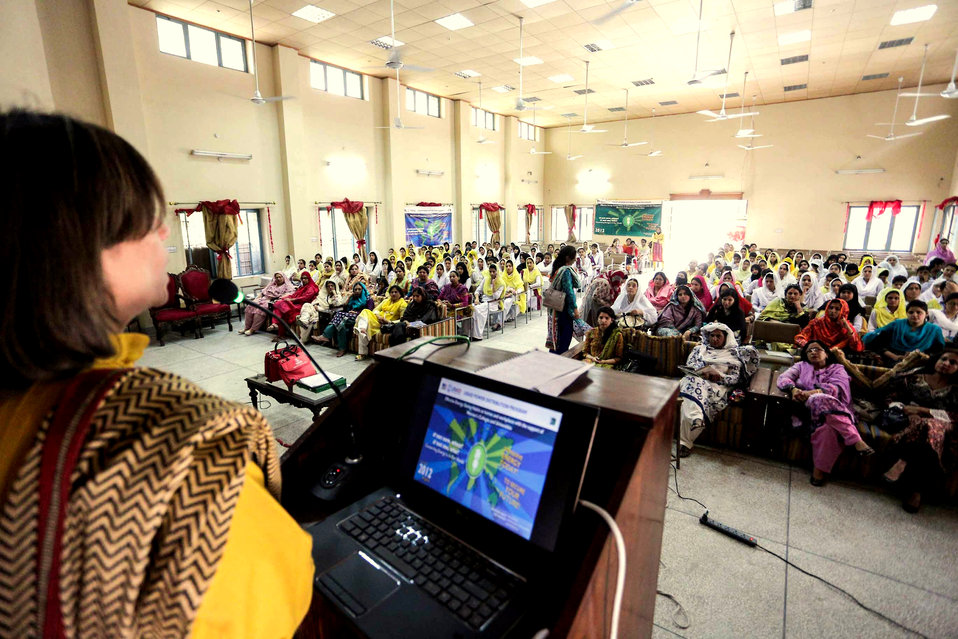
USAID enlightens women about energy conservation and opportunities in distribution companies

“These campaigns are an excellent opportunity for educating young women about to enter the workforce, about employment possibilities, while also educating them about their rights in the workplace, notably through the Protection against Harassment of Women at the Workplace Act of 2010.”
School Principal
Rohila Akbar

Four energy conservation campaigns were held at four women’s colleges of the LESCO region, where 1,200 students and 50 teachers were informed about Pakistan’s power sector. These activities aim to develop consumer awareness by involving female employees of DISCOs to inform and educate Pakistan’s female population about how to adopt energy saving habits at both homes and workplaces. The campaigns are targeted at women because as they take the message to “go green” to their homes, a ripple effect will be created that may help decrease the burden of the power shortfall at the grass-roots level.